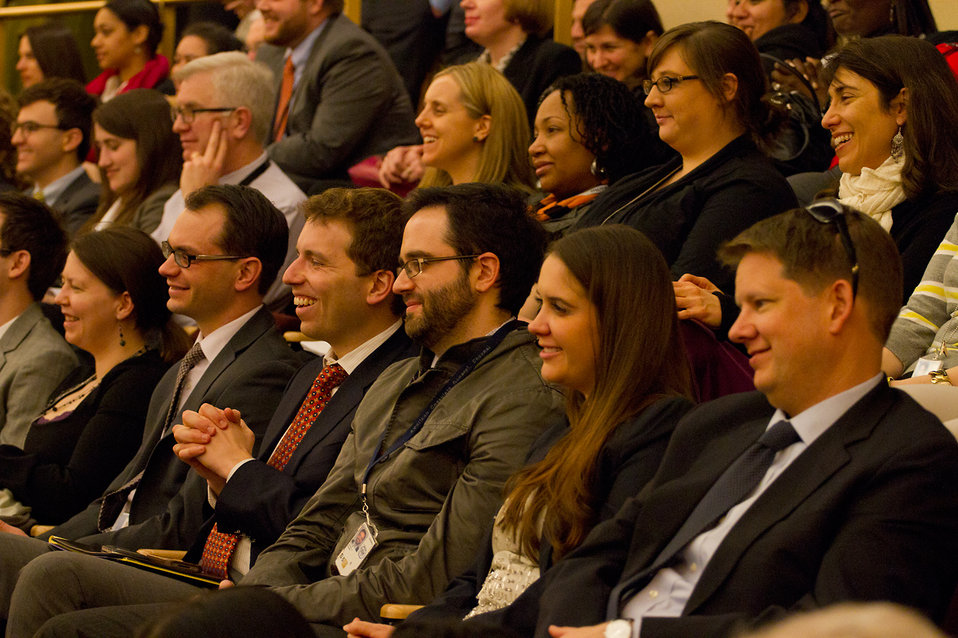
The Stars and Producer of Buzkashi Boys Visit the State Department

The stars and producer of the Oscar-nominated film Buzkashi Boys visit the U.S. Department of State in Washington, D.C., for a screening and Q and A on February 28, 2013.